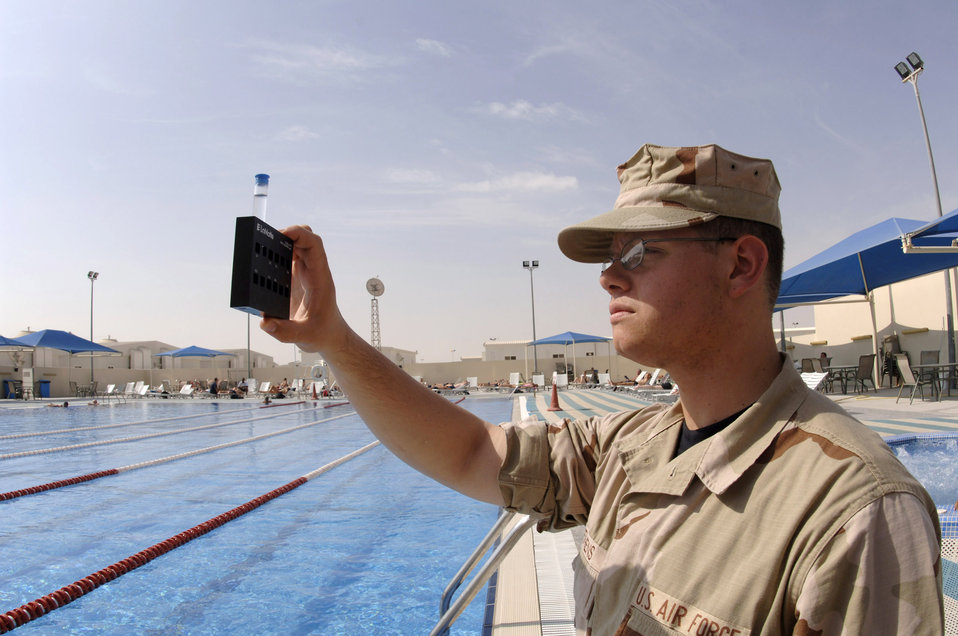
Keeping Airmen safe, secure

Airman 1st Class Brandon Stephens uses a chlorine kit to test pool water, which is checked weekly in Southwest Asia. Airman Stephens is a bioenvironmental engineering technician with the 379 Expeditionary Medical Group.